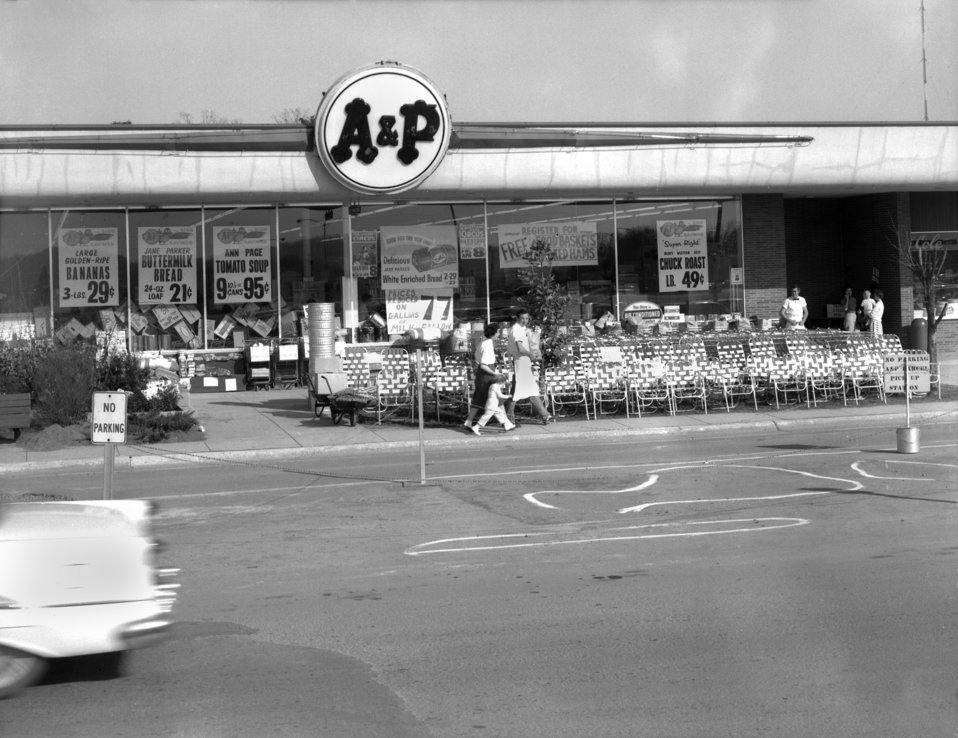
Downtown Center AandP Store Oak Ridge

60-537b DOE photo by T.R. Cook

Downtown Center A&P Store Oak Ridge Tennessee May 1960